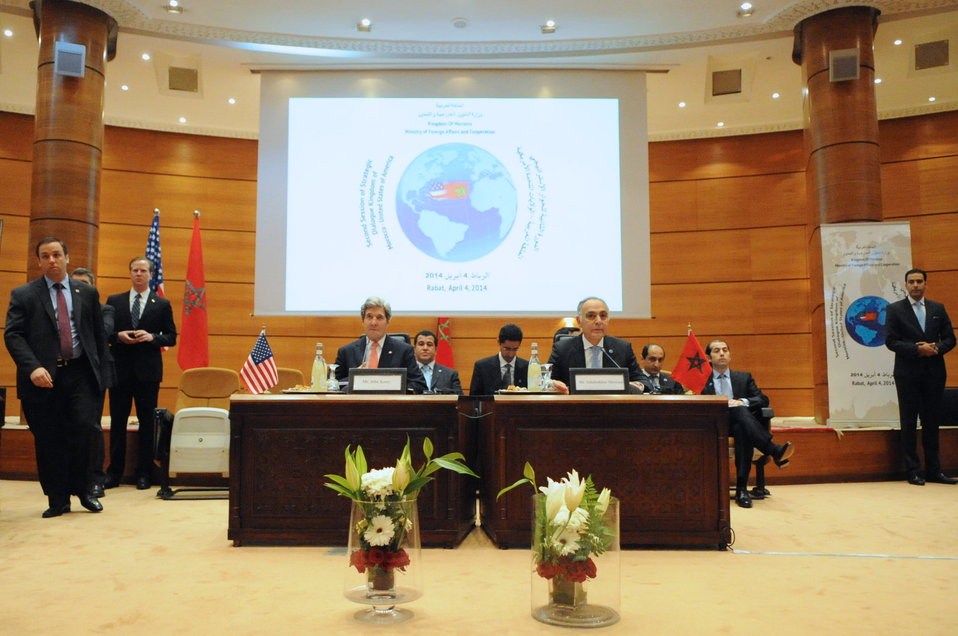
Secretary Kerry and Moroccan Foreign Minister Open Plenary Session of Strategic Dialogue in Rabat

U.S. Secretary of State John Kerry and Moroccan Foreign Minister Salaheddine Mezouar sit next to one another before the opening Plenary Session of the Strategic Dialogue between their two countries at the Ministry of Foreign Affairs in Rabat, Morocco on April 4, 2014.